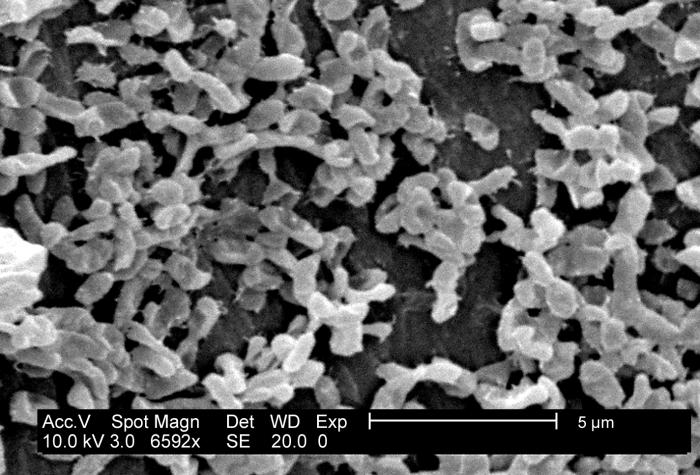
This SEM depicts a P. mirabilis (ATCC 29906) biofilm growing on PC (polycarbonate) coupons using a CDC biofilm reactor.